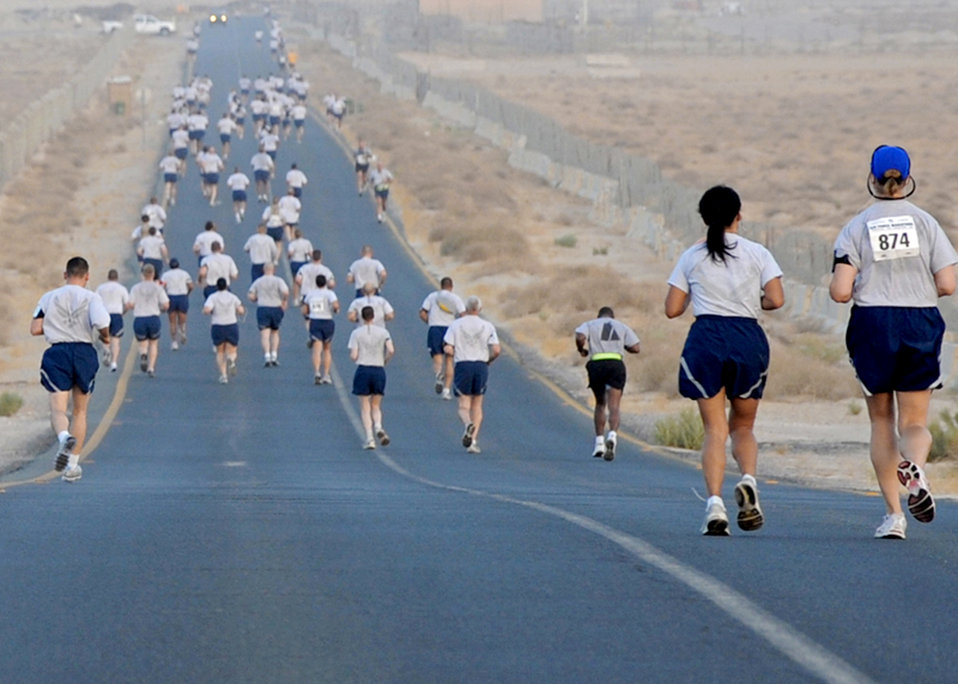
Only 12 miles to go

Airmen from the 386th Air Expeditionary Wing hit the pavement as they run the 13.1 mile Air Force Half Marathon at an air base in Southwest Asia Sept. 10, 2010. The 386th Expeditionary Force Support Squadron hosted the event to support the annual Air Force Marathon, which will take place Sept. 18 at Wright-Patterson Air Force Base, Ohio.